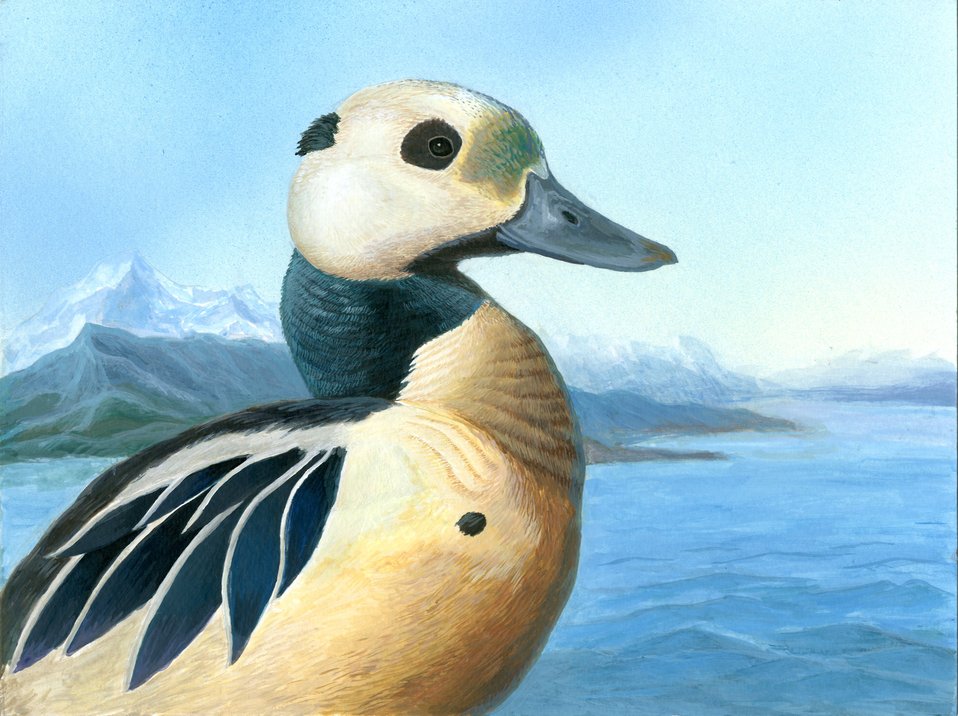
Virginia

2012 Jr Duck Stamp Program
State Best of Show
Virginia